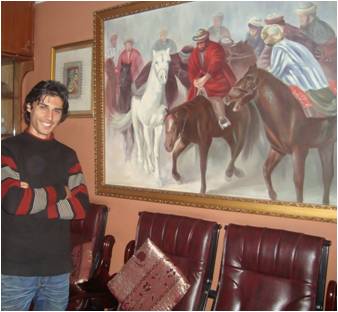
Energizing the Arts

Art may not spring to mind as a beneficiary of improved energy in Afghanistan. However, the availability of 24-hour electricity in Kabul is benefiting the efforts of a young local artist through USAID.
Kabir Ramz is a visual artist who paints on large oil canvases. As an art student at Kabul University several years ago, Kabir was so committed to his work that he would rise early every morning to take advantage of the dawn’s light. Making his way to the university campus, he would arrive before classes to paint and sketch.
In those days, electricity was erratic at best.
At night, his only option for power was a small generator in the apartment where he lived with his family. “With oil painting, I need normal light to choose the right colors,” he said. “The generator was bad, disturbing the neighbors and filling the house with smoke.”
After his classes in the afternoon, Kabir worked as a designer for a sign and billboard company. There, a high-voltage generator powered the sensitive machines that produced stainless steel, acrylic, and brass signboards. “I did that for four years,” Kabir said. “When there was no electricity, everything shut down.”
Today, because of USAID energy programs, multiple sources of steady electricity power Kabul including electricity imported from neighboring countries and hydropower. A new 105-megawatt power plant, built on the outskirts of Kabul by USAID’s Afghanistan Infrastructure Reconstruction Program, provides 20 percent of Kabul’s peak electricity.
Life for Kabir has improved significantly since his student days. The sign company where he still works has pioneered neon billboards and no longer relies on generators. He has city power at home in the evenings and if Kabir needs to check something on the internet, he switches on his personal computer.
Kabir describes the difference as only an artist might. “Now we can breathe where we want,” he said. “I am busier now than when there was no electricity.”